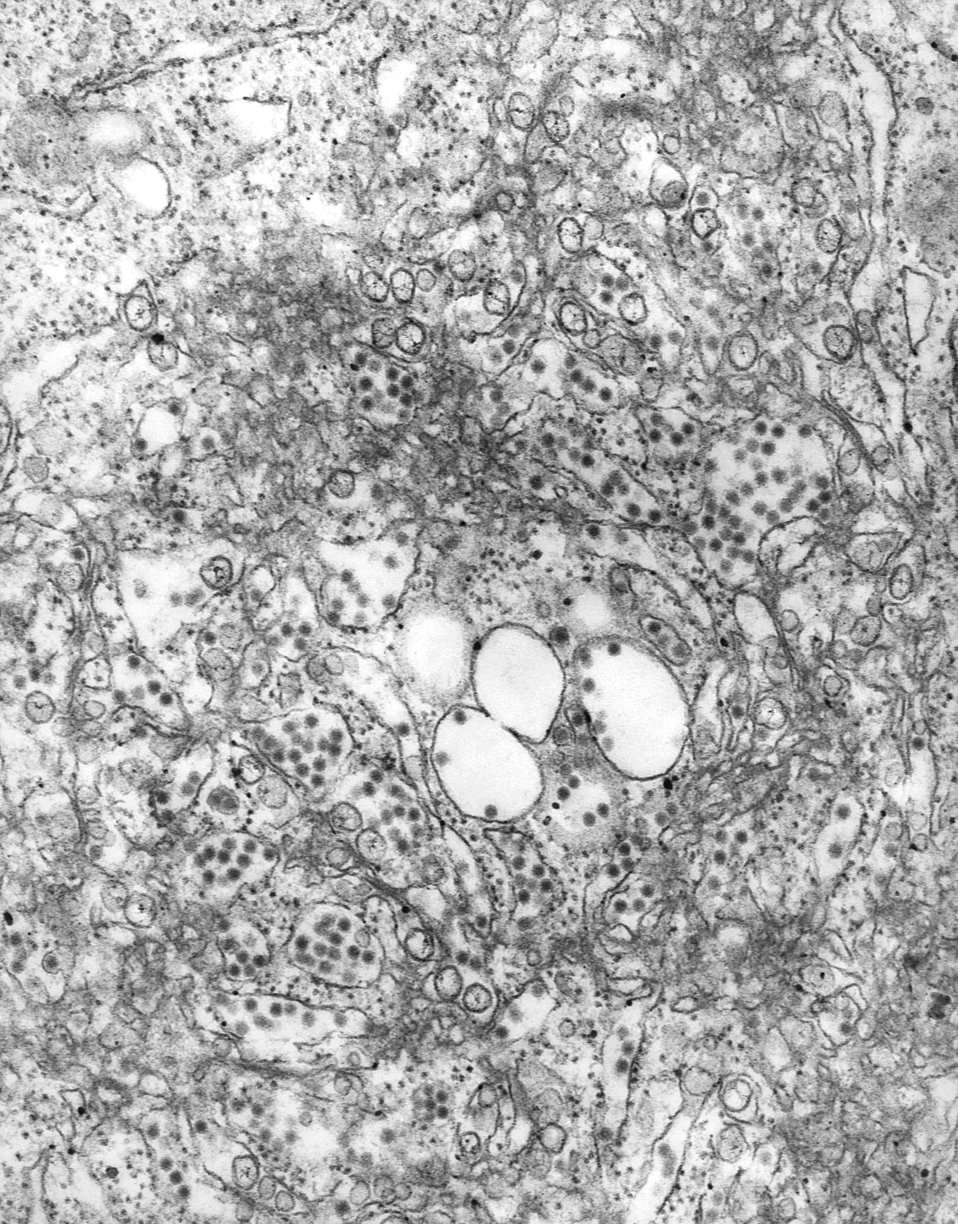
This negatively-stained transmission electron micrograph (TEM) revealed the presence of numerous Russian spring-summer encephalitis (RSSE) virions, which are members of the virus family, Flaviviridae. RSSE is transmitted when one is bitten by a Ixodes persulcatus hard tick, and is therefore, referred to as a 'tick-borne encephalitis' (TBE).